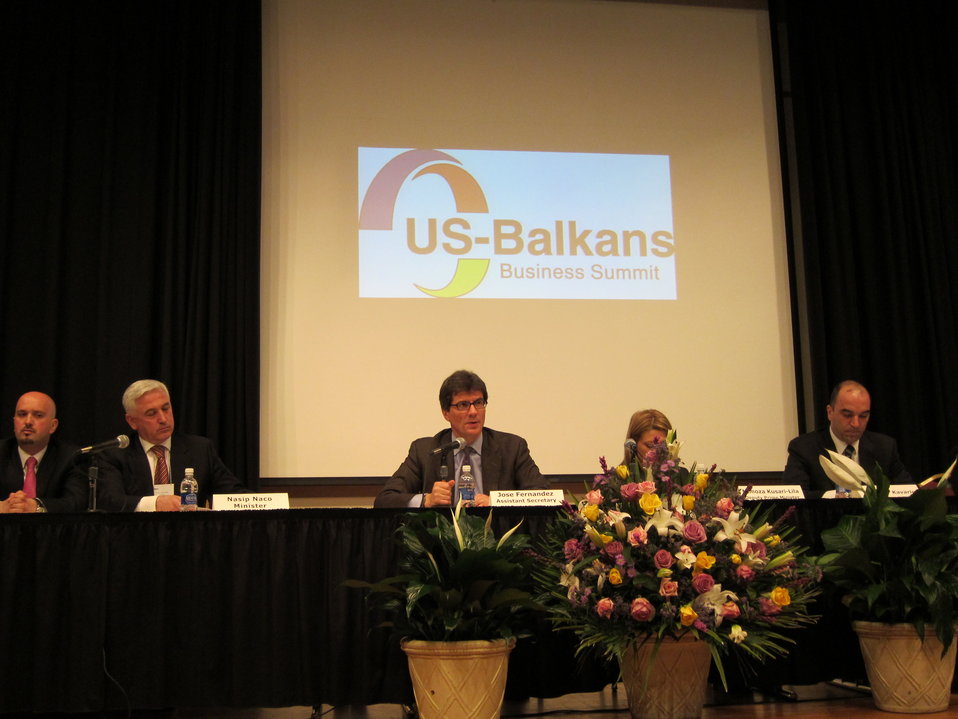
Assistant Secretary Fernandez Participates in the Balkans Business Summit

Assistant Secretary of State for Energy, Economic and Business Affairs Jose Fernandez participates in the Balkans Business Summit in Baltimore, Maryland, on March 24, 2011.